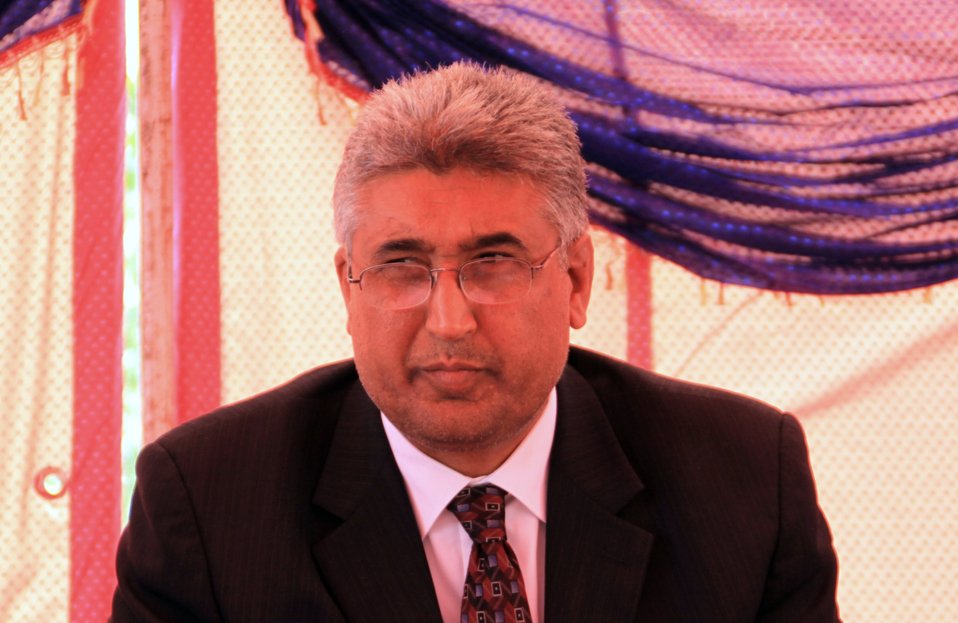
Badam Bagh Farm